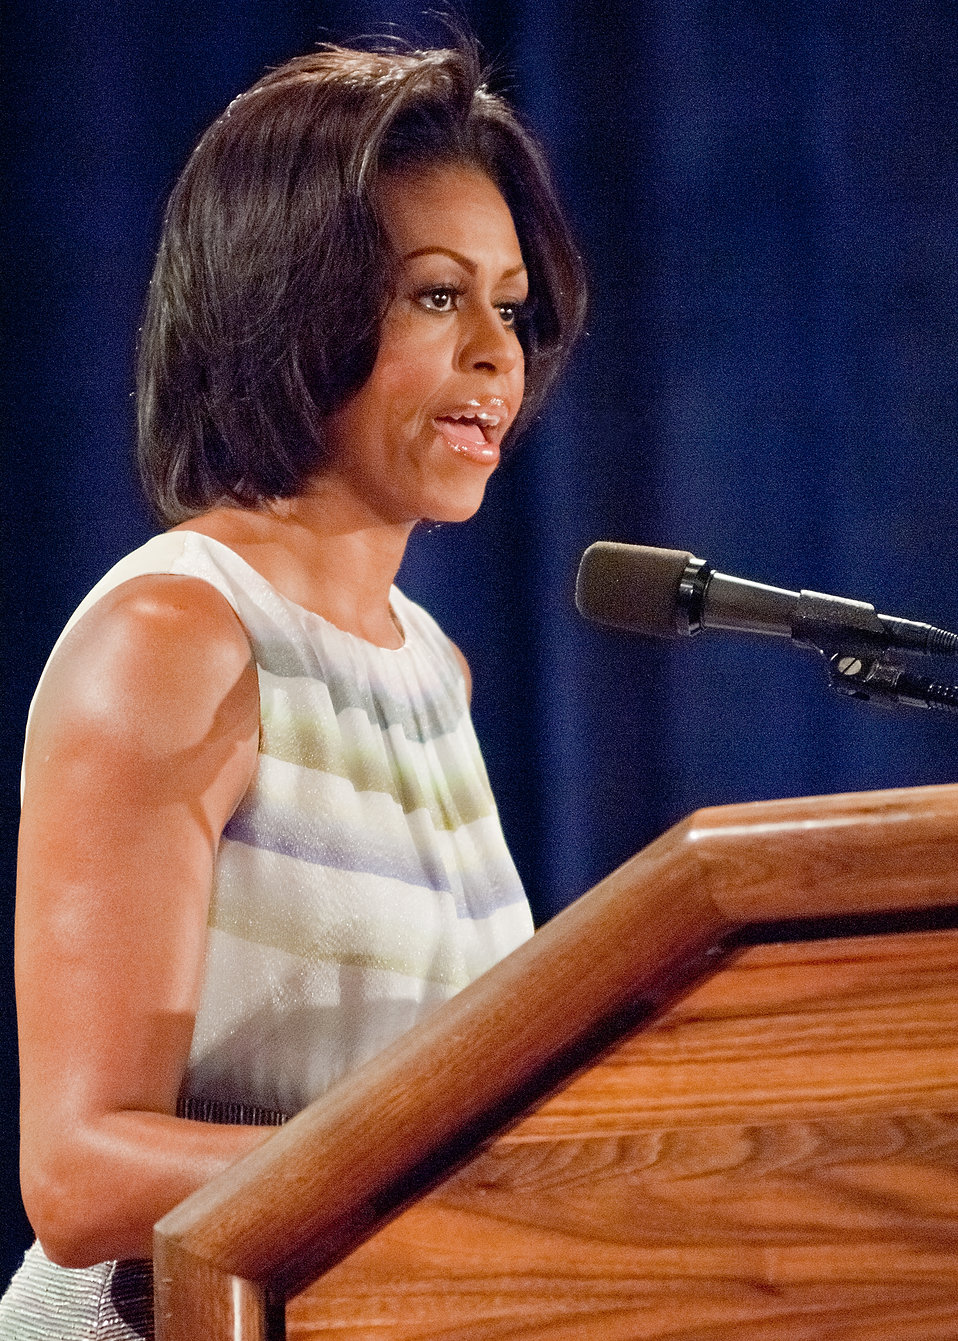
First Lady Michelle Obama unveiled the new food icon that will serve as a reminder to help consumers make healthier food choices at the United States Department of Agriculture, Thursday, June 2, 2011. The White House Child Obesity Task Force called for simple advice to consumers with information to help them make healthy food choices. As a result USDA has introduced the new food icon to replace the MyPyramid image representing the food guide pyramid as the government’s primary food group symbol.